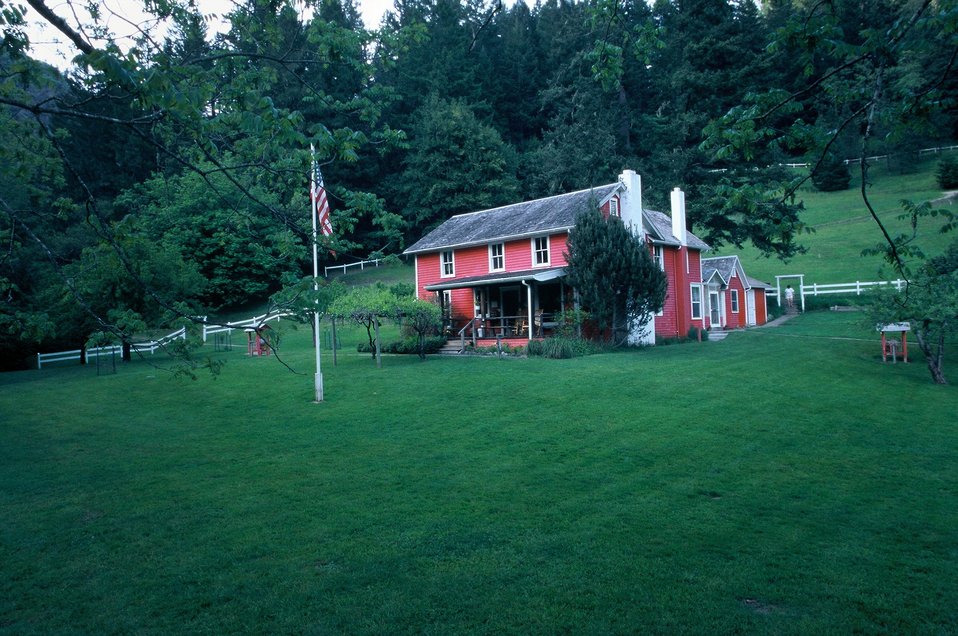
Wild section of the Rogue River from Grave Creek to Foster Bar May 19 to May 22.